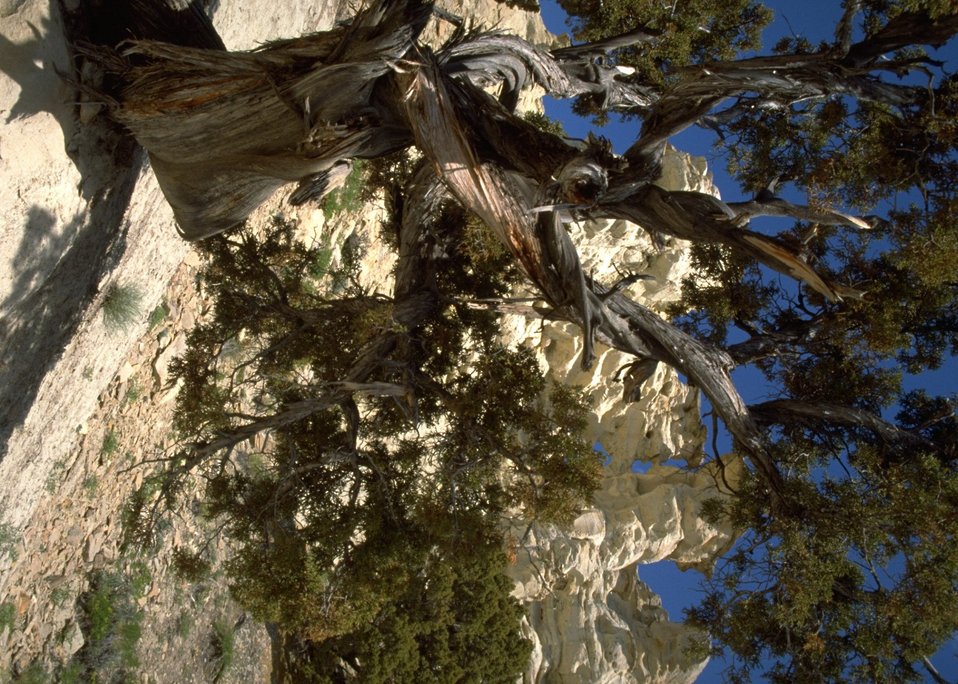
Scenic rock site.